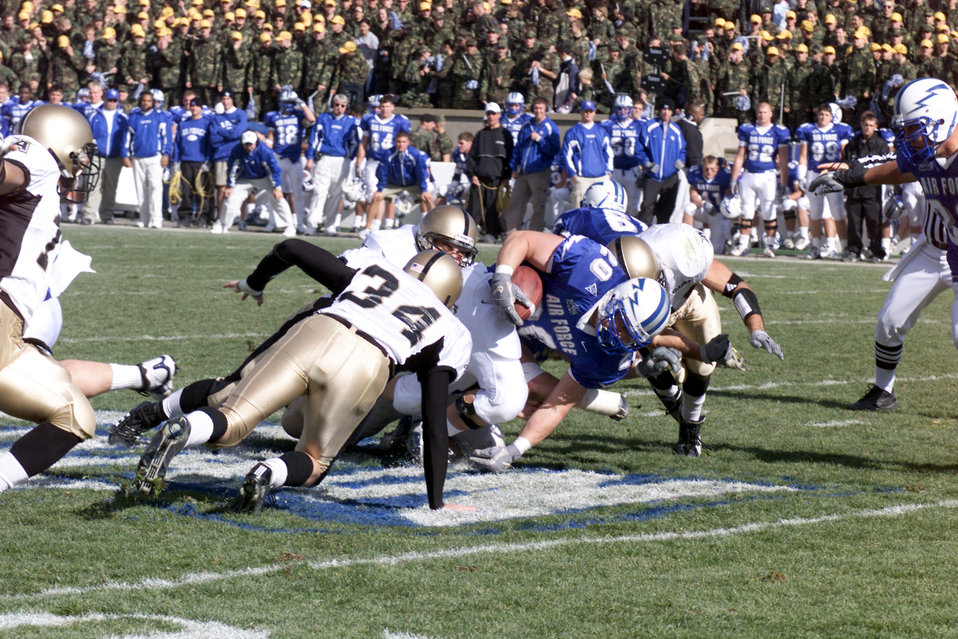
Air Force crushes Army, 31-3

U.S. AIR FORCE ACADEMY, Colo. -- Falcons fullback Dan Shaffer plunges forward through Army tacklers for a gain. Shaffer ground out 47 yards during Air Force's 31-3 victory over Army on Nov. 8.